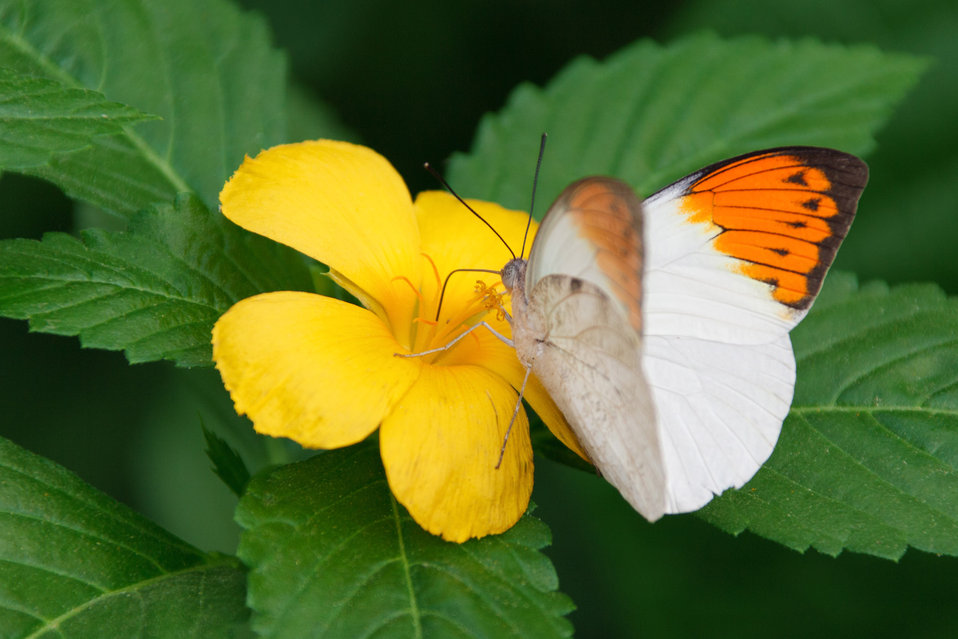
Orange tip butterfly

Hebomoia glaucippe - orange tip butterfly on a yellow flower.